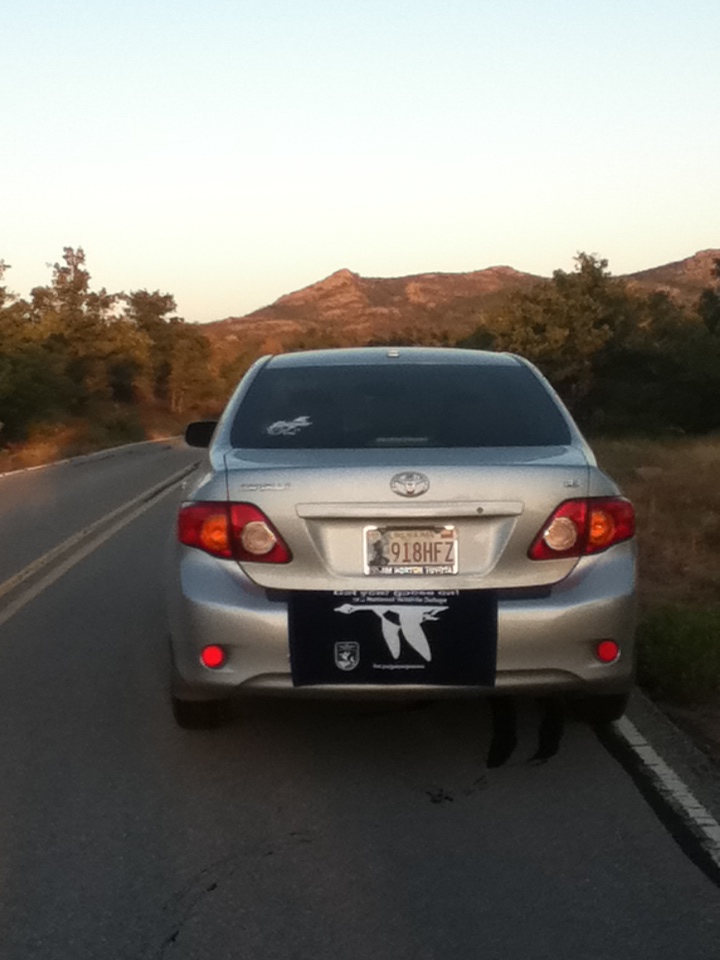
Get Your Goose On!

Wichita Mountains National Wildlife Refuge in Oklahoma.